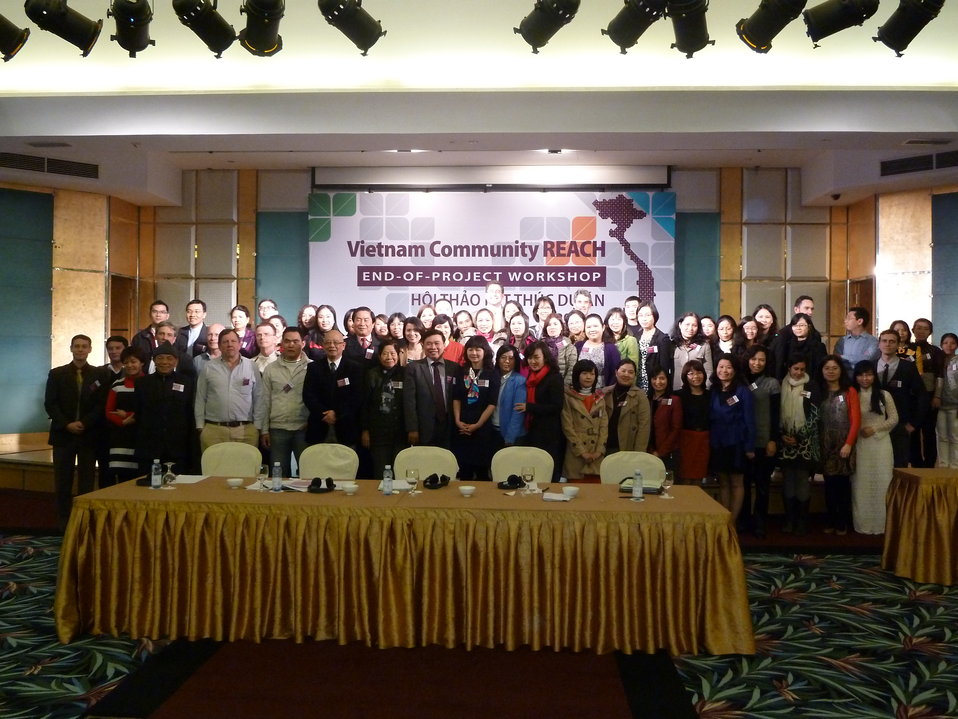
USAID, PEPFAR, and Pact award certificates to local and international partners for their work in addressing HIV in Vietnam

Community REACH project close-out with USAID and implementing partner, Pact